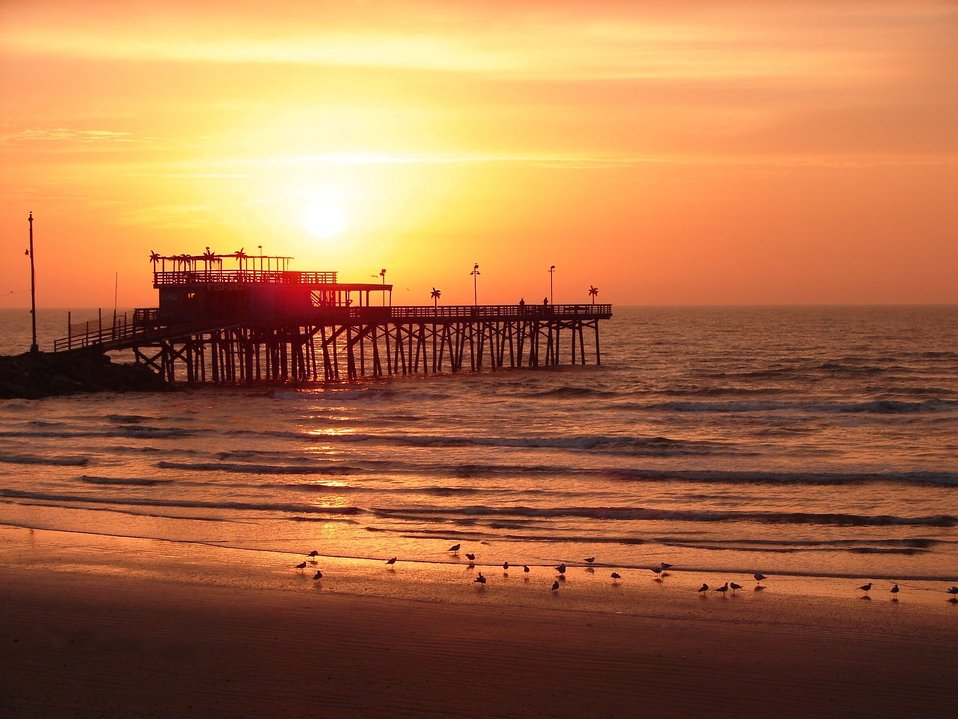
Orange beach, Galveston, Texas